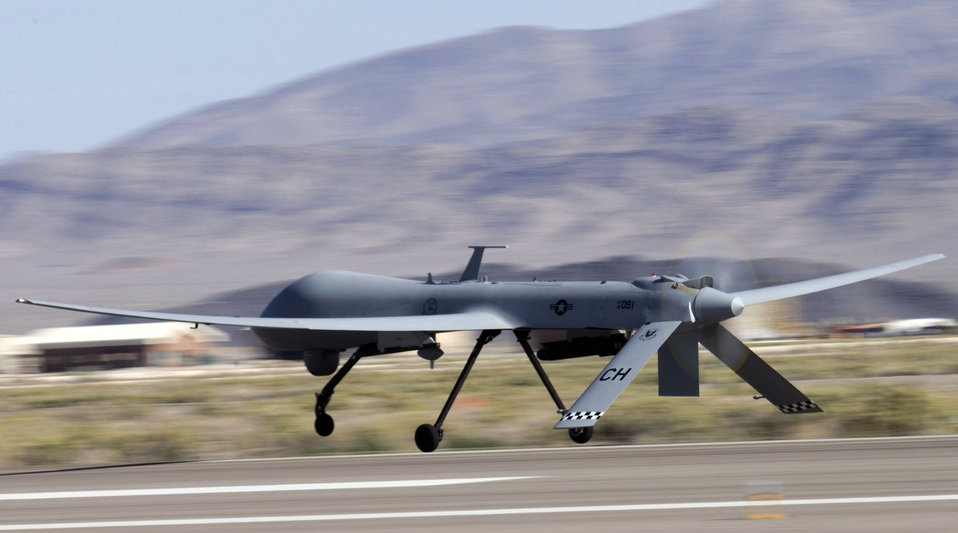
Oct. 12 airpower summary: Predator fires Hellfire Missile

An MQ-1 Predator, like this one, fired an Air-to-Ground Missile-114 against enemies of Afghanistan on Oct. 12. The MQ-1 is a medium-altitude, long-endurance, unmanned aircraft system. The primary mission of the UAS is interdiction and conducting armed reconnaissance against critical, perishable targets.